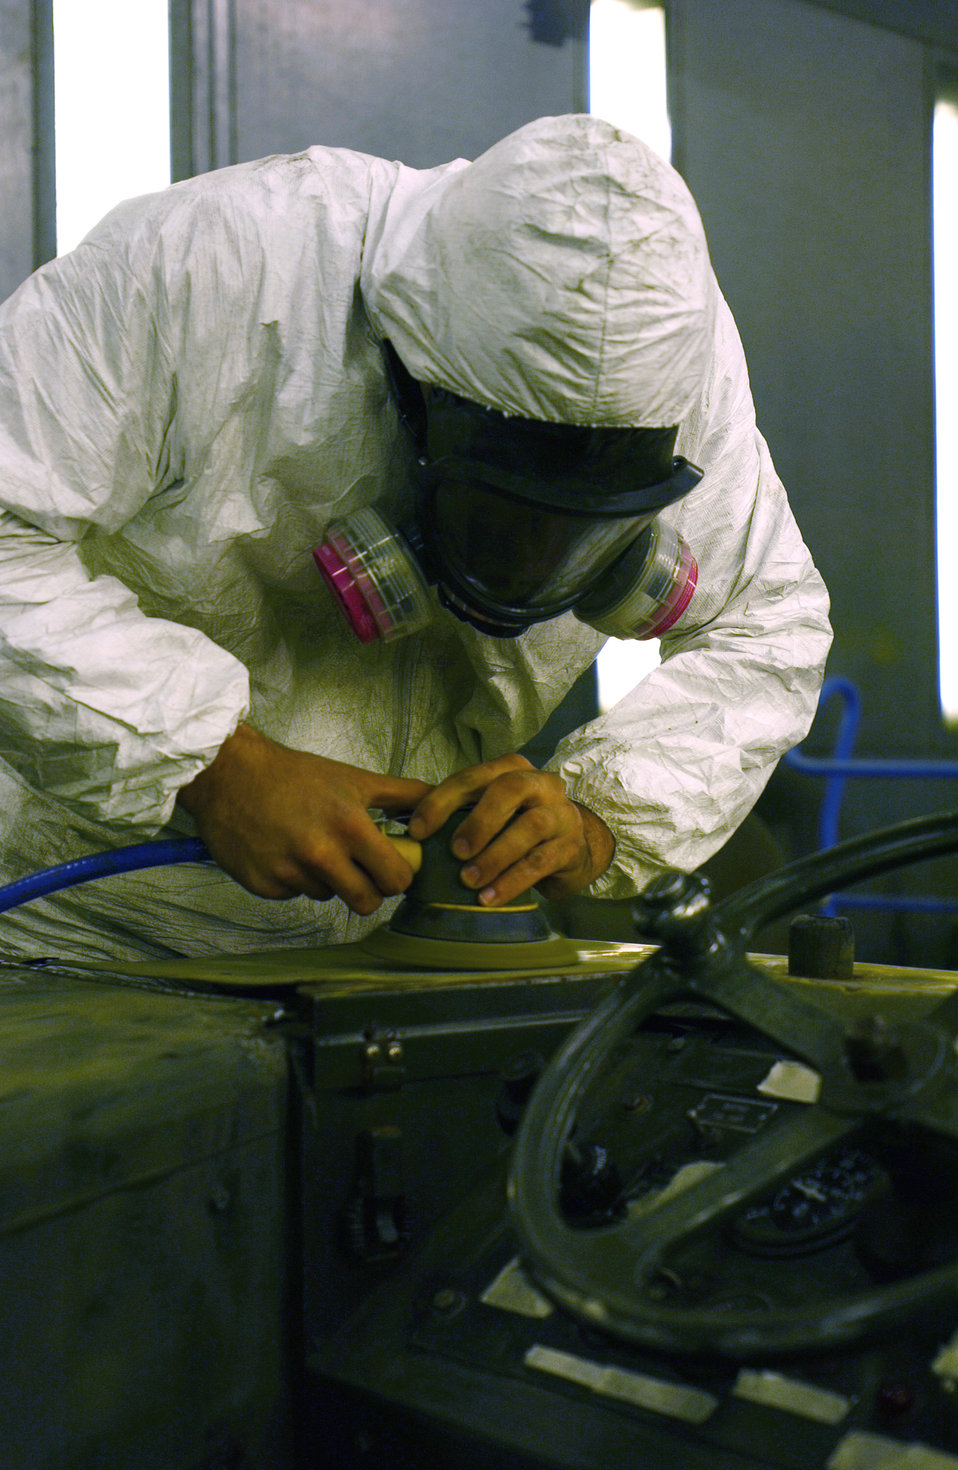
Wax on wax off

ROYAL AIR FORCE LAKENHEATH, England -- Airman 1st Class Francis Leonard sands a piece of equipment so it can be primed here April 13. Airman Leonard is an aircraft ground equipment apprentice with the 48th Equipment Maintenance Squadron.